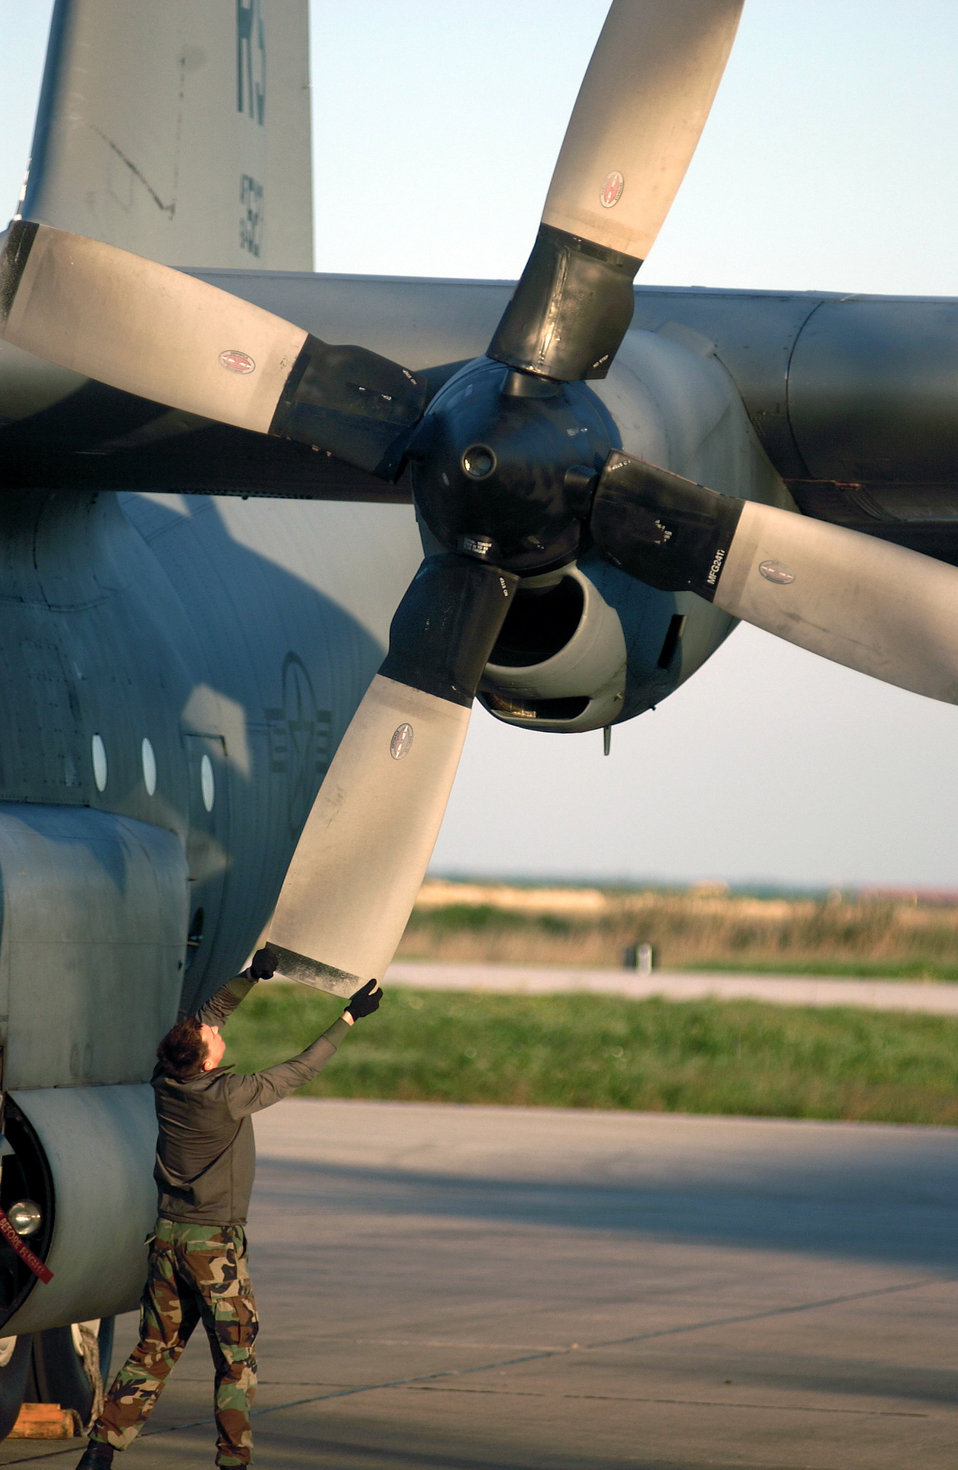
Big blades keep on turnin'

LISBON, Portugal -- Senior Airman Ryan Conti rotates propeller blades on a C-130 Hercules after the aircraft landed here. It is the first of eight aircraft based at Ramstein Air Base, Germany, to arrive here for refurbishment by a local contractor. Airman Conti is a crew chief assigned to the 37th Airlift Squadron.